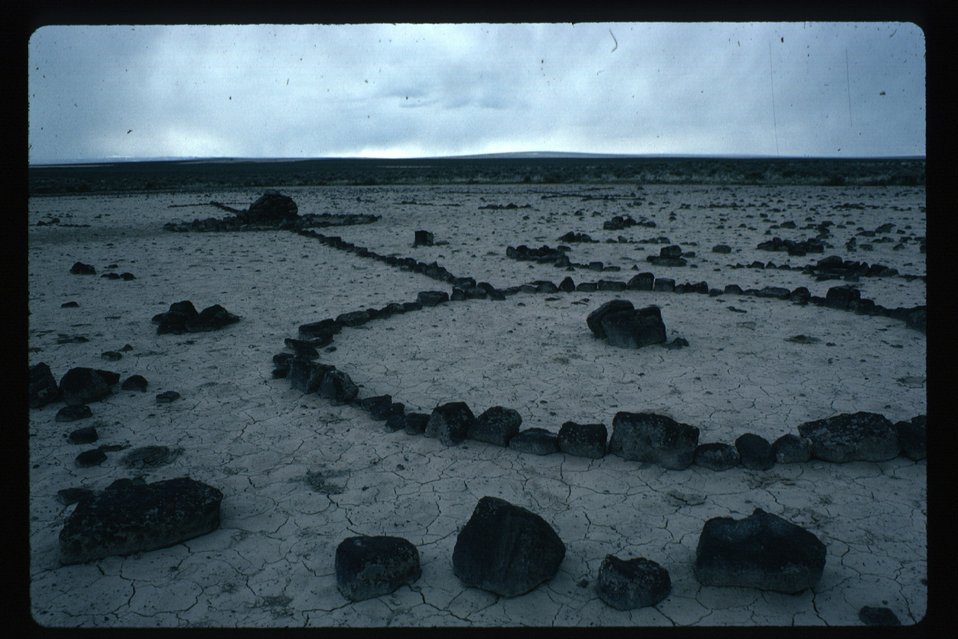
Rock Alignment Archeology LSRD Lower Snake River District